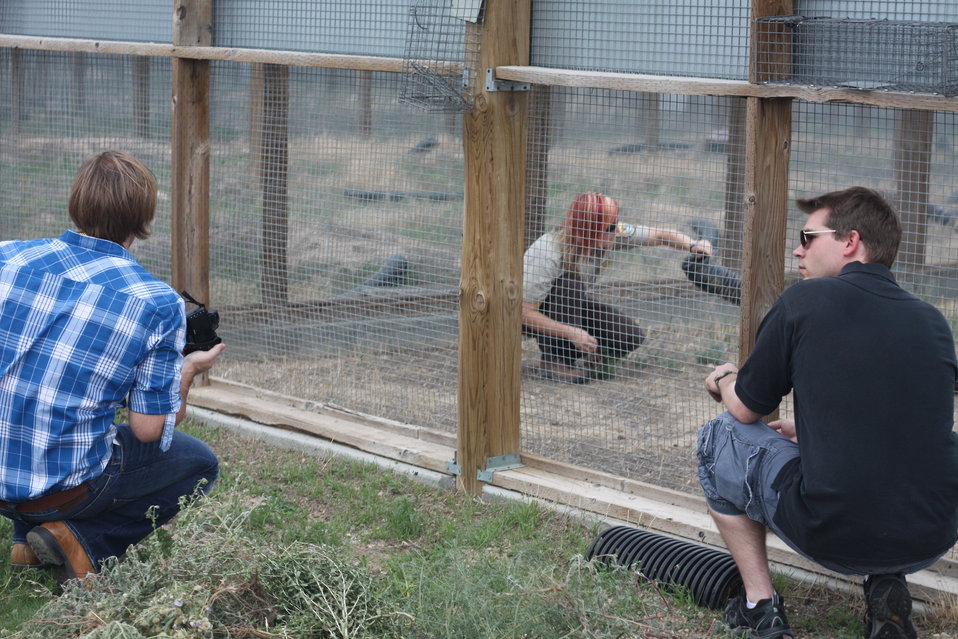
Interns visit the NBFFCC

In the summer of 2012, USFWS Region 6 interns visited the National Black-footed Ferret Conservation Center (NBFFCC) in Colorado to learn how the program reintroduces the endangered Black-footed ferret back into its native habitat.

Pictured here, Robyn Bortner (NBFFCC Biologist) shows the outdoor preconditioning pens to Ryan and the interns.